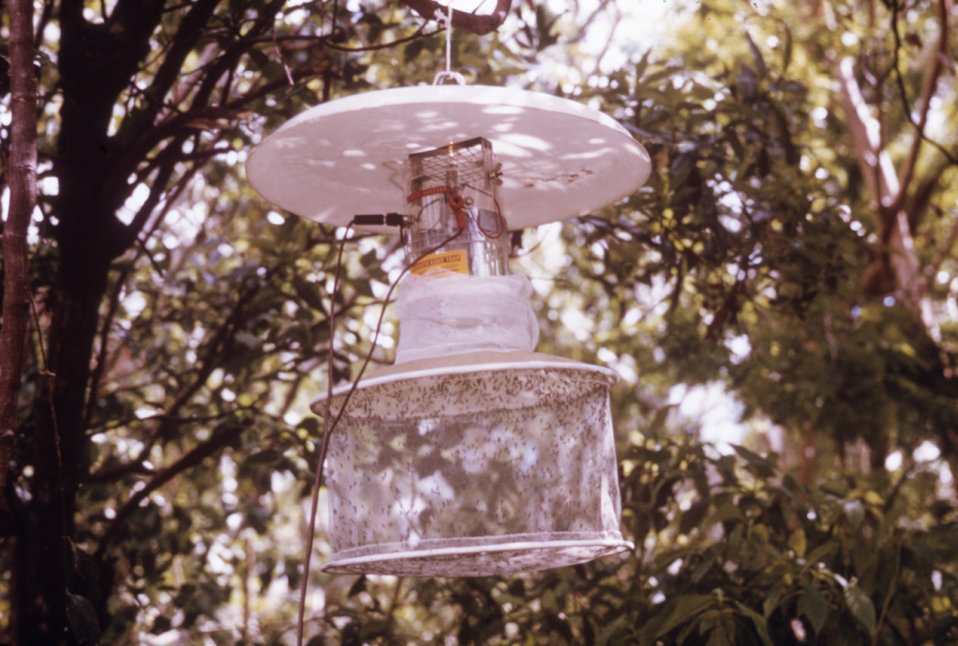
This image shows a CDC light trap that has trapped many mosquitoes. Light traps are frequently used in arbovirus field studies.